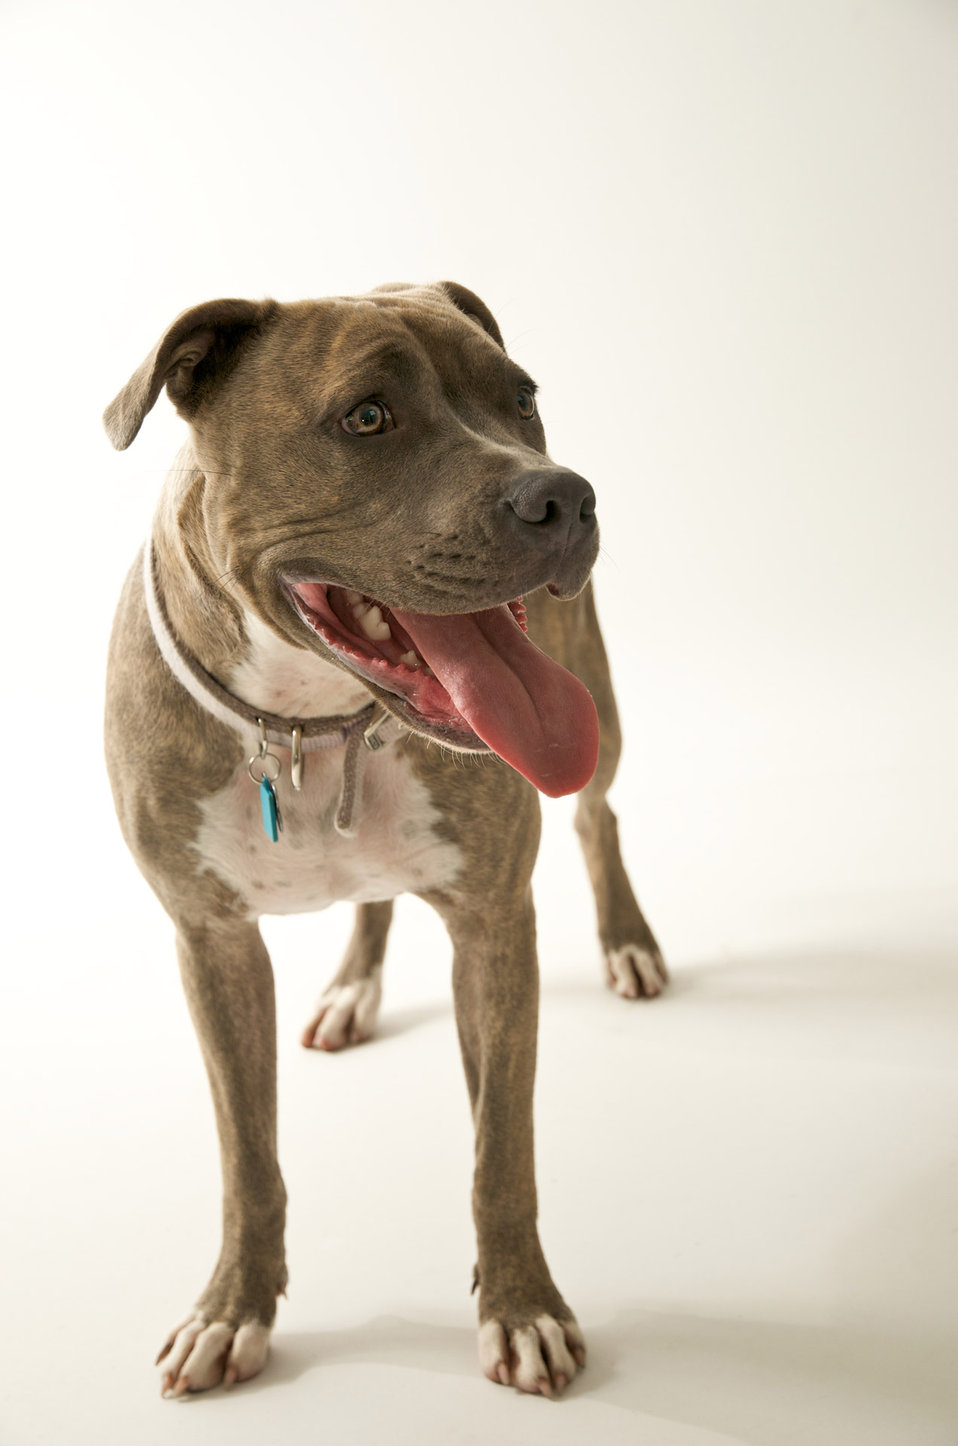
Blue

Grey rottweiler.